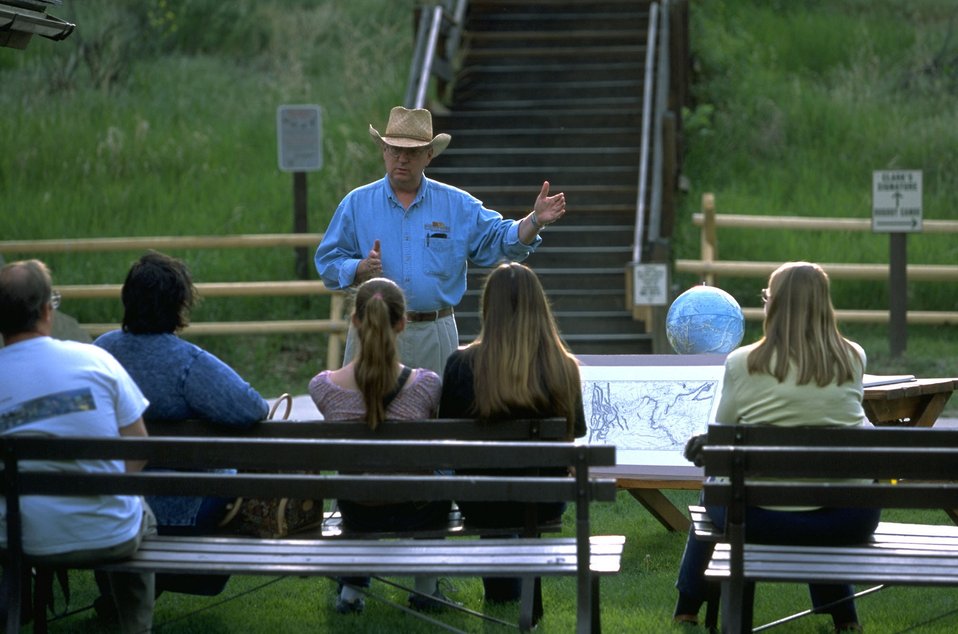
Back lawn area of the Pompeys Pillar Visitor Center. Interpretive program is in progress on mapping by Captain William Clark - presented by John Levar